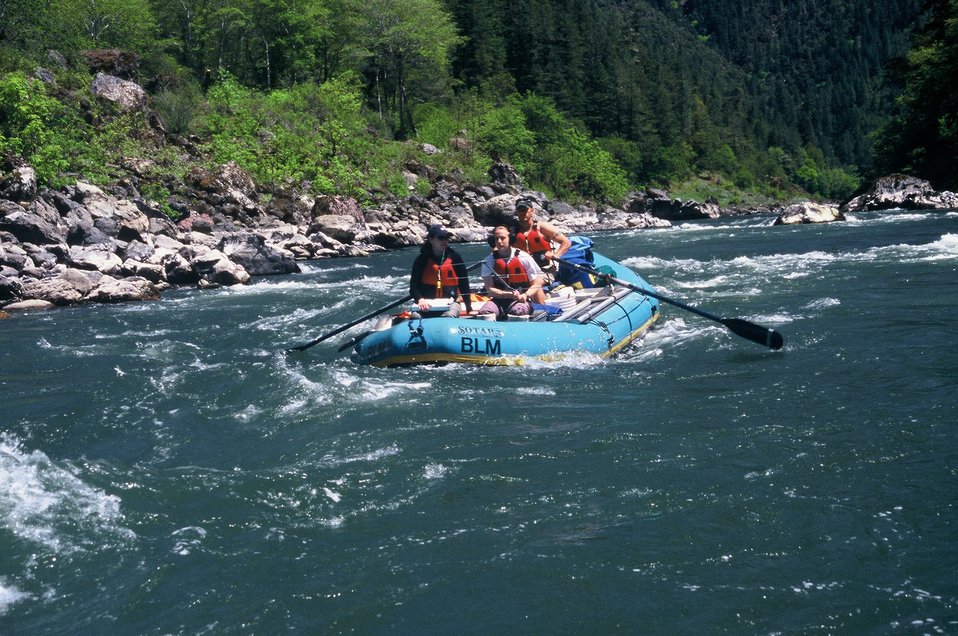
Wild section of the Rogue River from Grave Creek to Foster Bar May 19 to May 22.